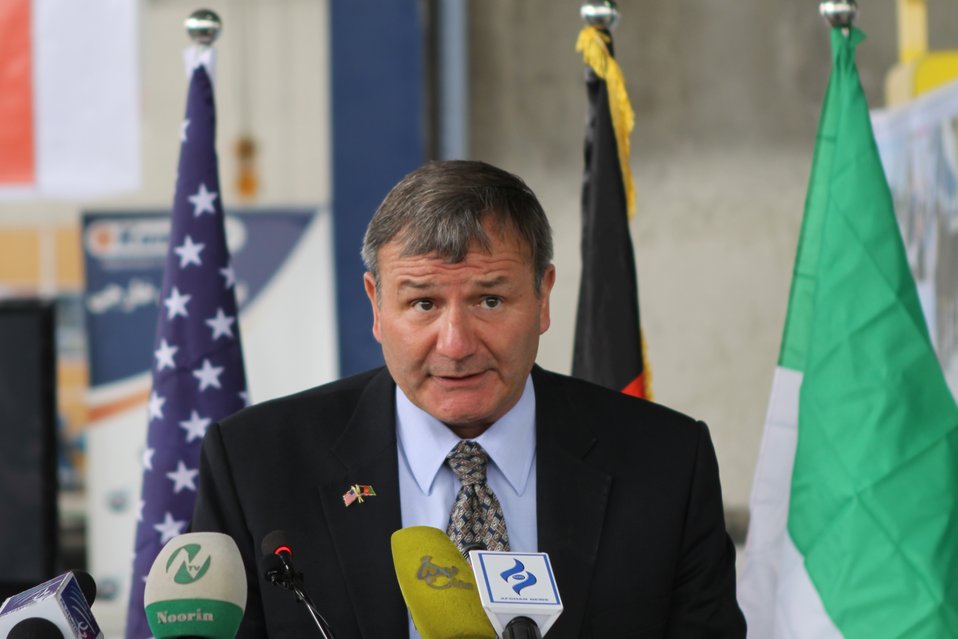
100525 Hirat Marble Conference 234